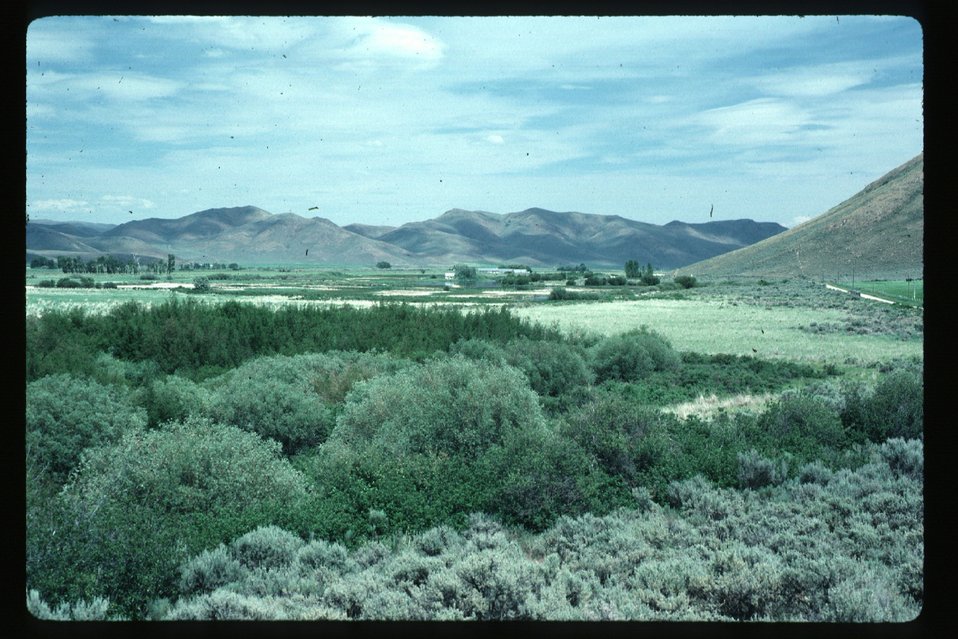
Riparian Shoshone Field Office Silver Creek